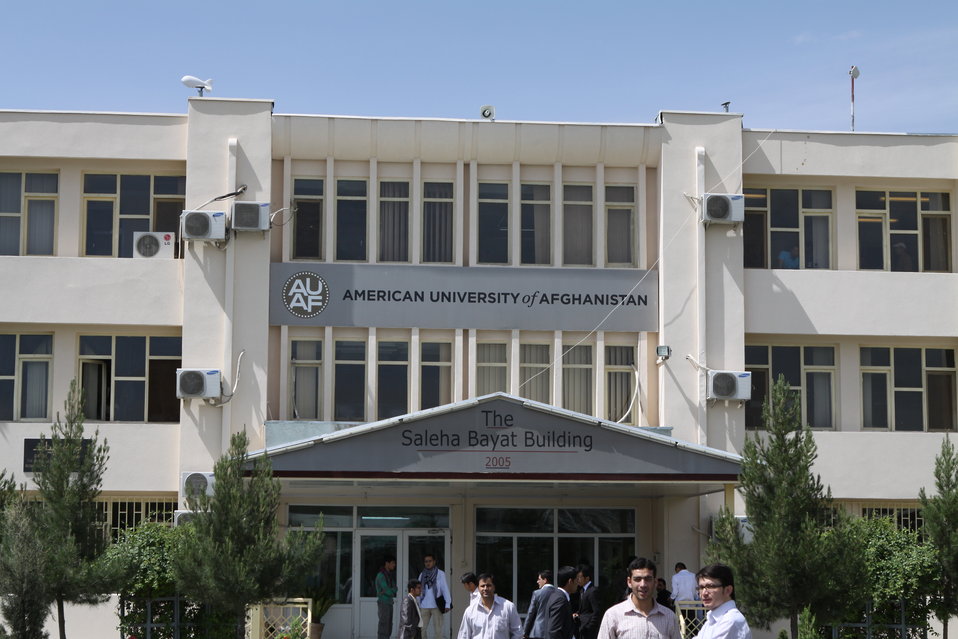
100526 AUAF Graduation 002